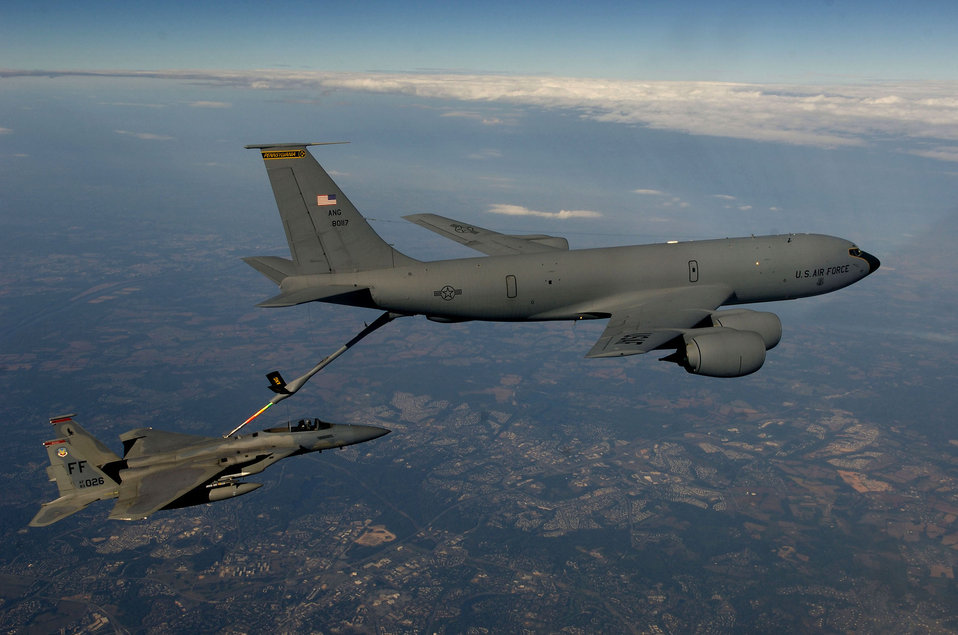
Keeping watch over the nation

Capt. Matt Buckner, an F-15 Eagle pilot assigned to the 71st Fighter Squadron at Langley Air Force Base, Va., receives fuel from a KC-135 Stratotanker assigned to the Pennsylvania Air National Guard's 171st Air Refueling Wing during a combat air patrol mission Oct. 7 over Washington, D.C., in support of Operation Noble Eagle.